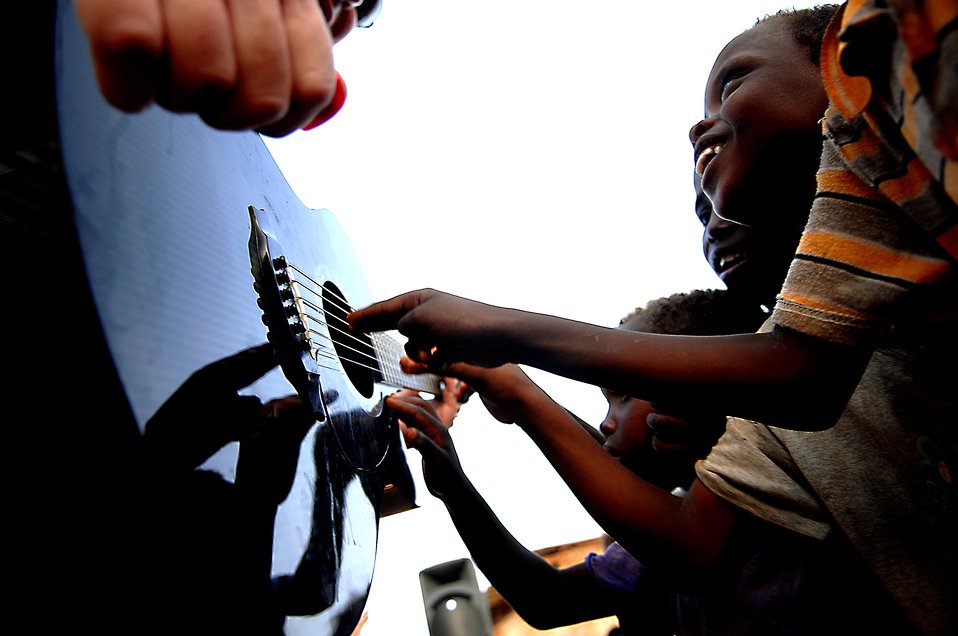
U.S. Air Force Band Concert, Djibouti

Djiboutian children explore Senior Master Sgt. Jimmy Weber's guitar during a performance May 22 by the Air Force Central command band, Falcon, in Negad, Djibouti. The band is deployed in support of Combined Joint Task Force - Horn of Africa out of Camp Lemonier, Djibouti.